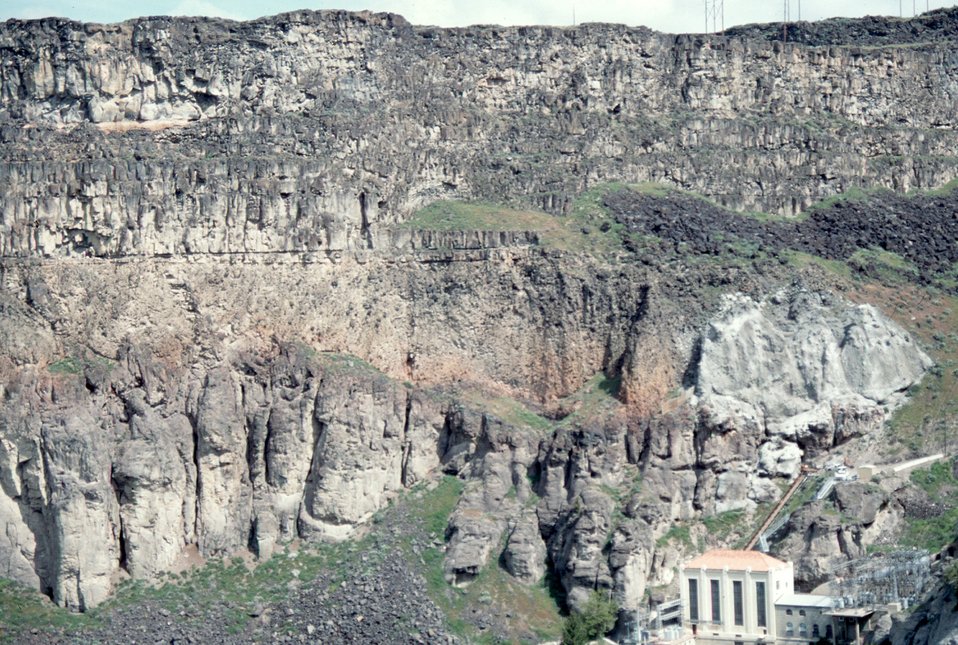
Shoshone Falls Shoshone Field Office USRD Upper Snake River District